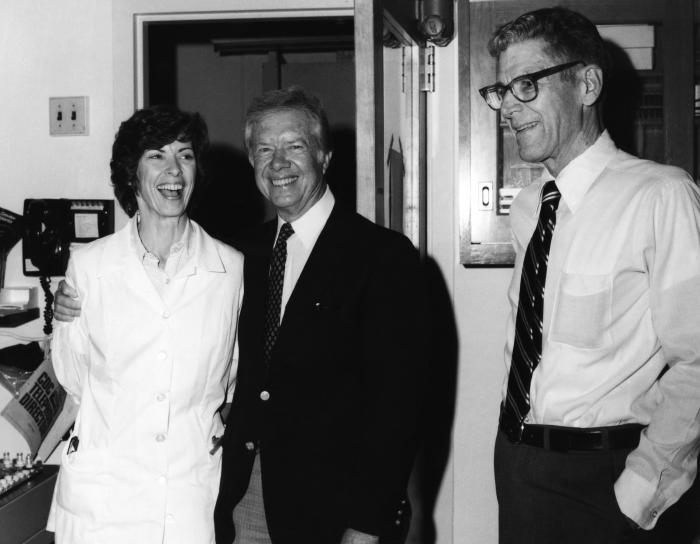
This photograph showed former U.S. President Jimmy Carter (1977-1981) as he was speaking with laboratorians during his 1985 visit to the Centers for Disease Control and Prevention (CDC).